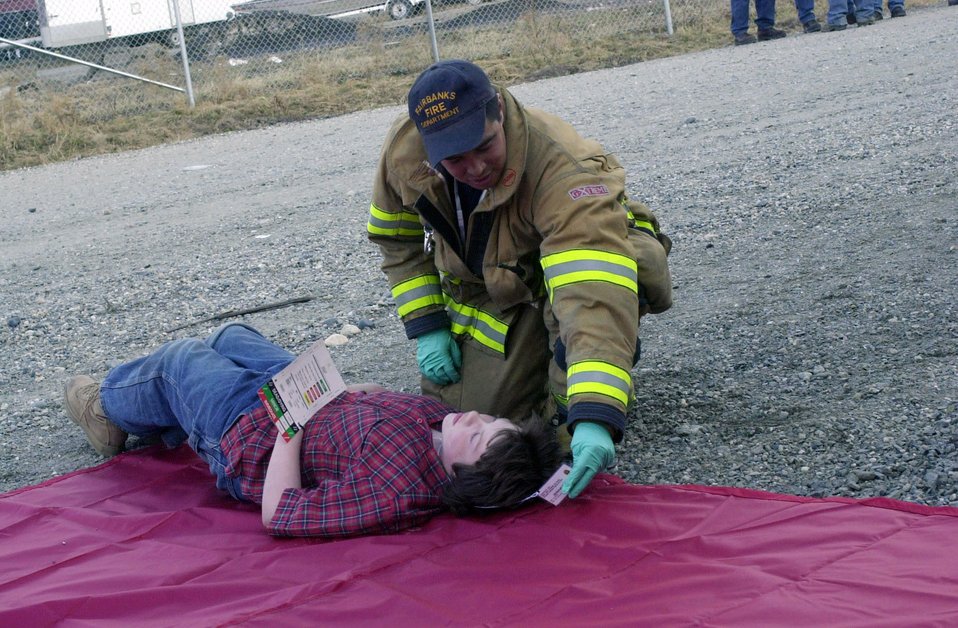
Government agencies test emergency coordination

Mike Gho of the Fairbanks Fire Department checks the triage status of a simulated accident victim May 8 as part of Alaska Shield/Northern Edge 2007. The exercises, which are scheduled to run from May 7 to 18, test military and civilian authorities throughout Alaska on all aspects of emergency preparedness as they respond to a variety of scenarios including natural disasters and major accidents.